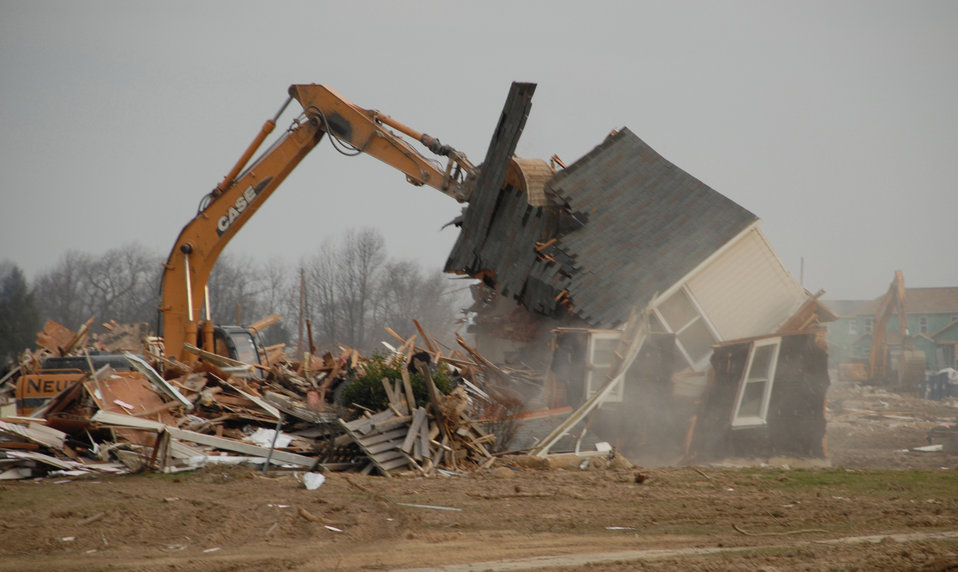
Dover housing to claim award

The last of the Dover Air Force Base old housing is demolished Jan. 16 in Delaware. In all, 978 units have been demolished on Dover AFB since 2004 to make way for 980 new homes for Dover AFB Airmen. The entire projected is scheduled for completion in 2009.